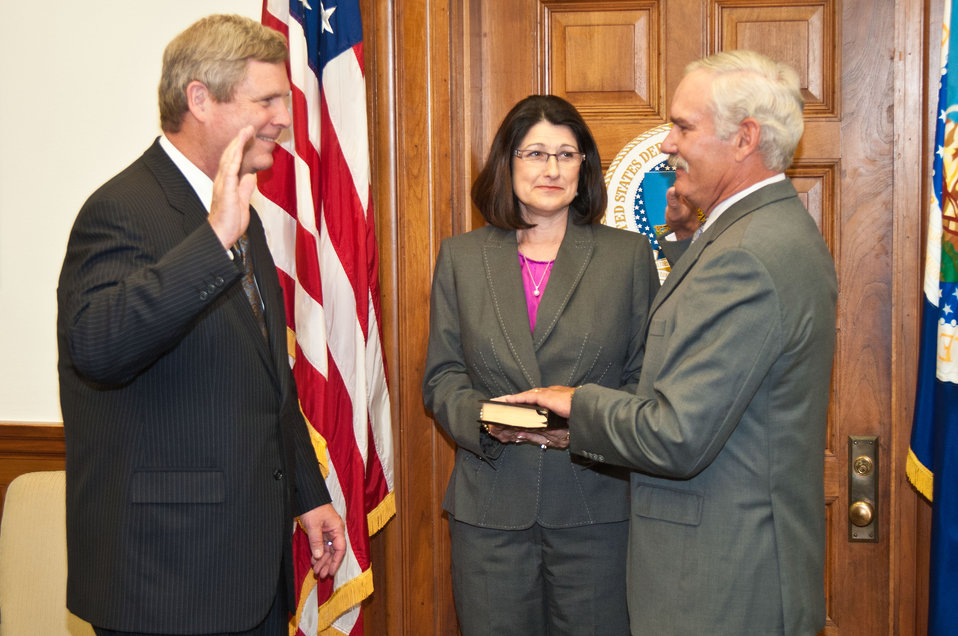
Agriculture Secretary Tom Vilsack (left) swore in Michael Scuse (right) as Under Secretary, Farm and Foreign Agricultural Services at the United States Department of Agriculture in Washington, D.C., on Monday, May 14, 2012. Patrice Scuse (center) Under Secretary Scuse’s wife holds the family Bible.